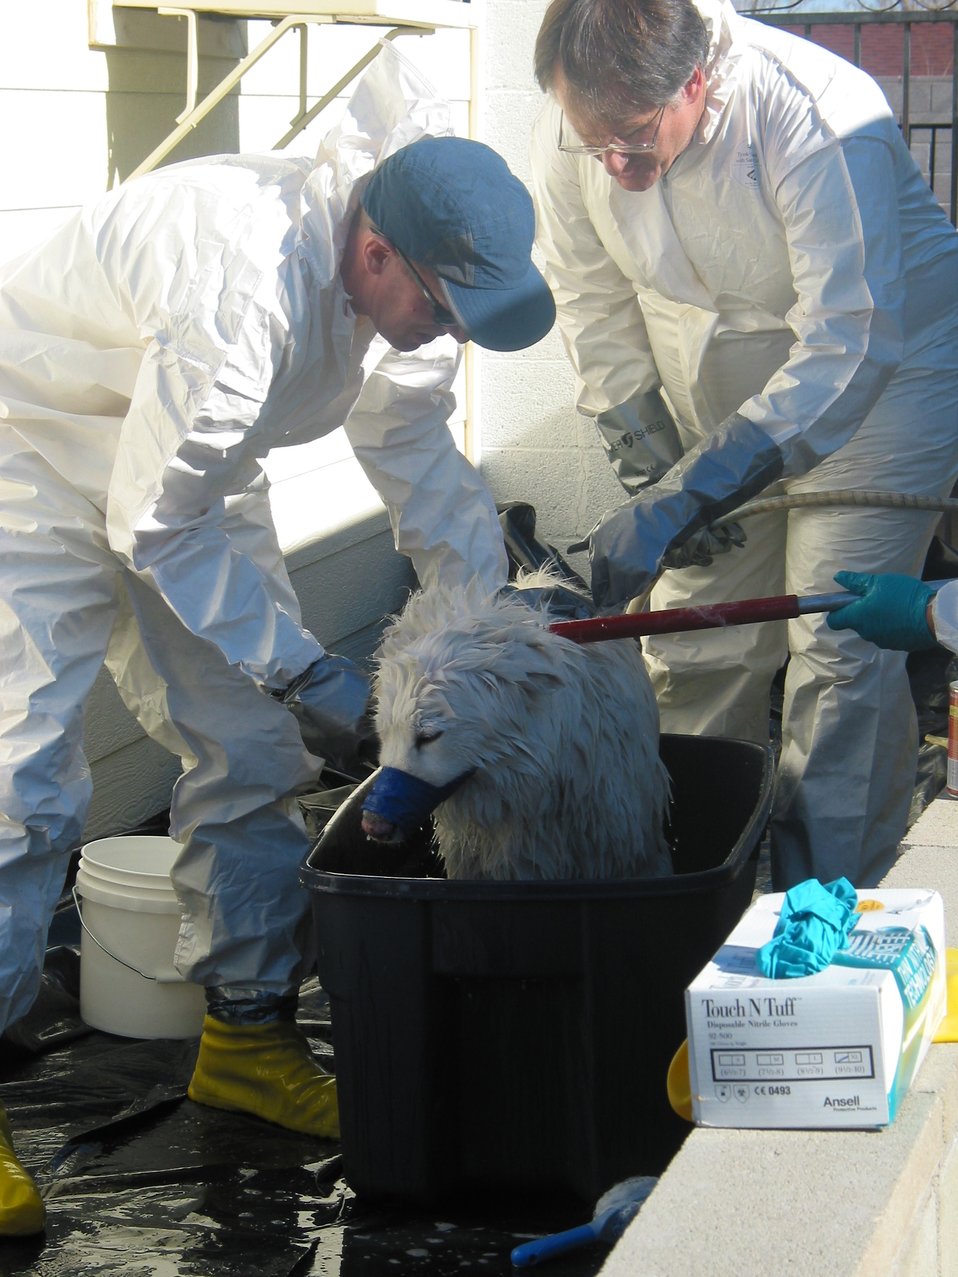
Workers clean Snowball the dog after exposure to mercury

EPA Superfund Emergency Response contractors decontaminate the dog, Snowball, to remove any mercury that might be hidden in his fur. Snowball was eventually shaved at attempts to decontaminate him.